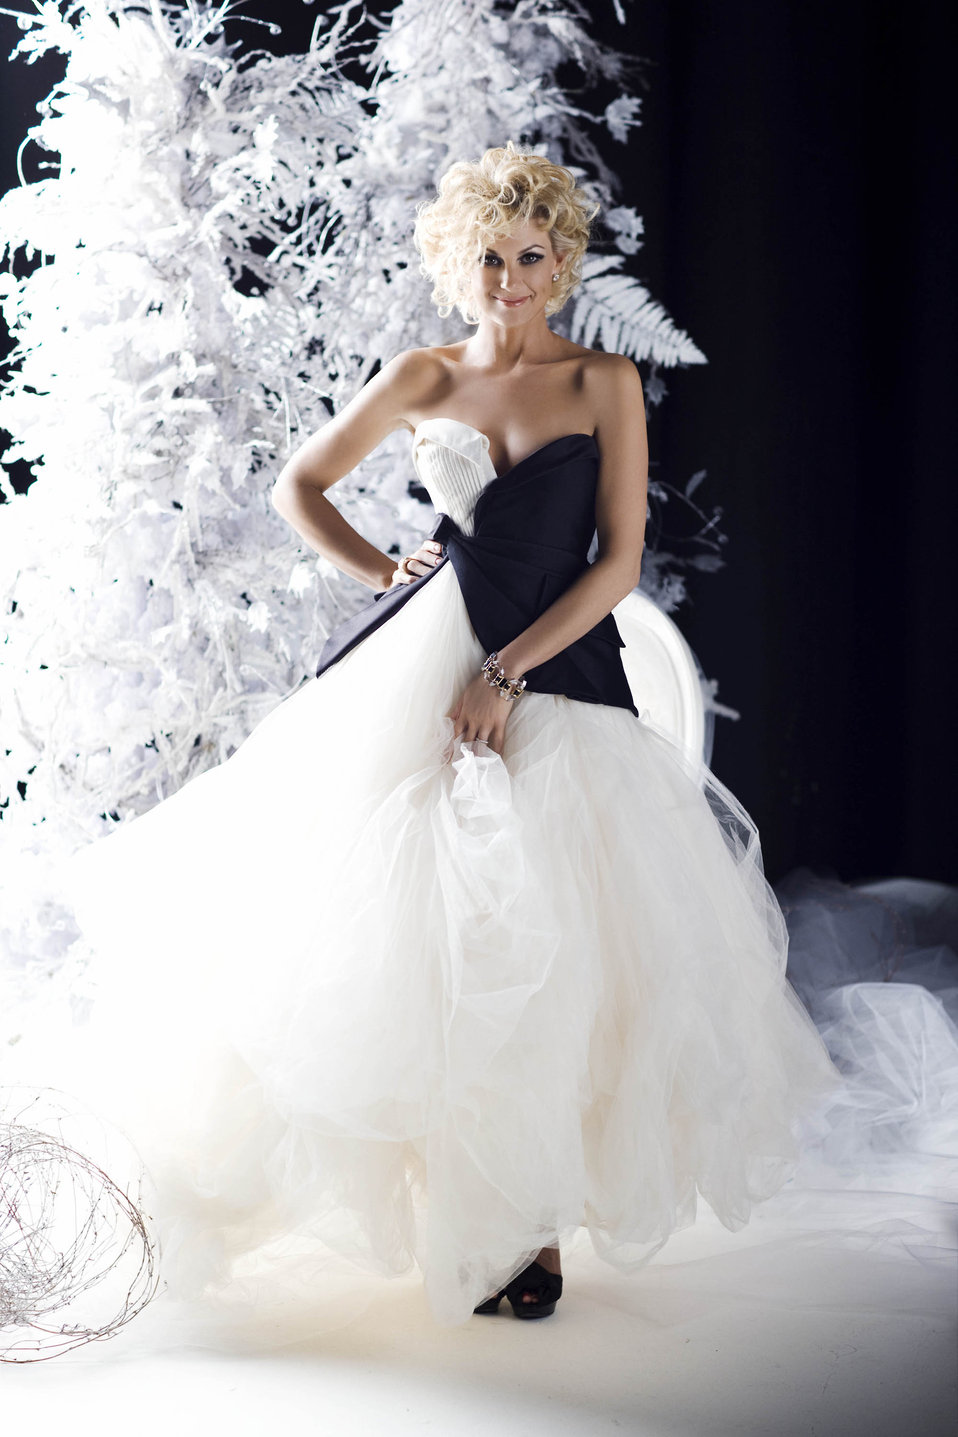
Air Force radio show features Faith Hill

081209-F-0000Z-002: Country music star Faith Hill collaborated with the Air Force Recruiting Service for the 2008